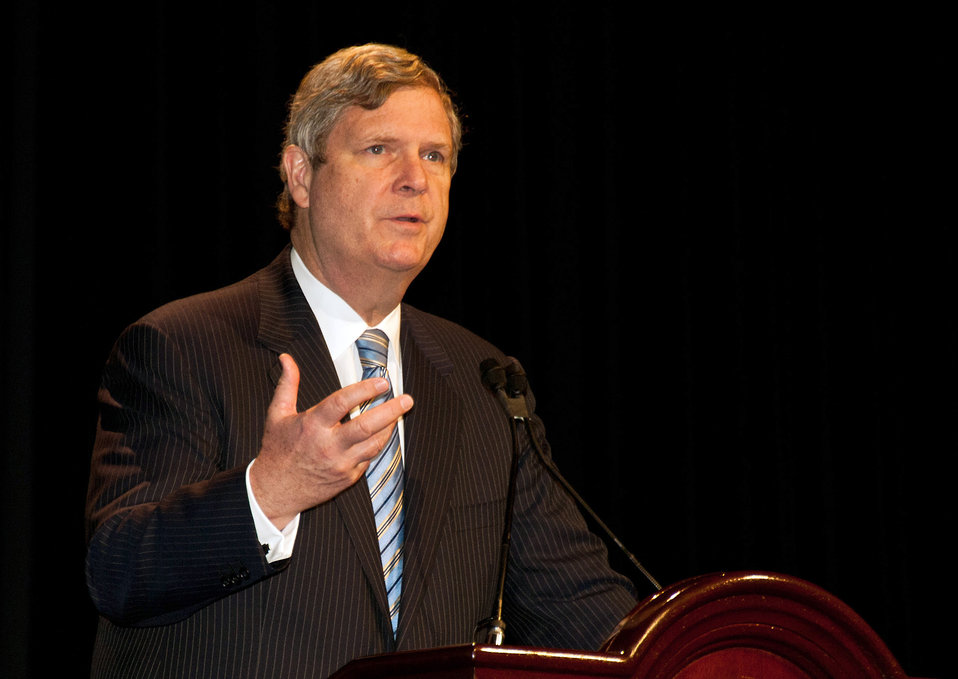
Agriculture Secretary Tom Vilsack gives the Keynote Speech at the 2013 Commodity Classic in Kissimmee, FL on Friday, Mar. 1, 2013.